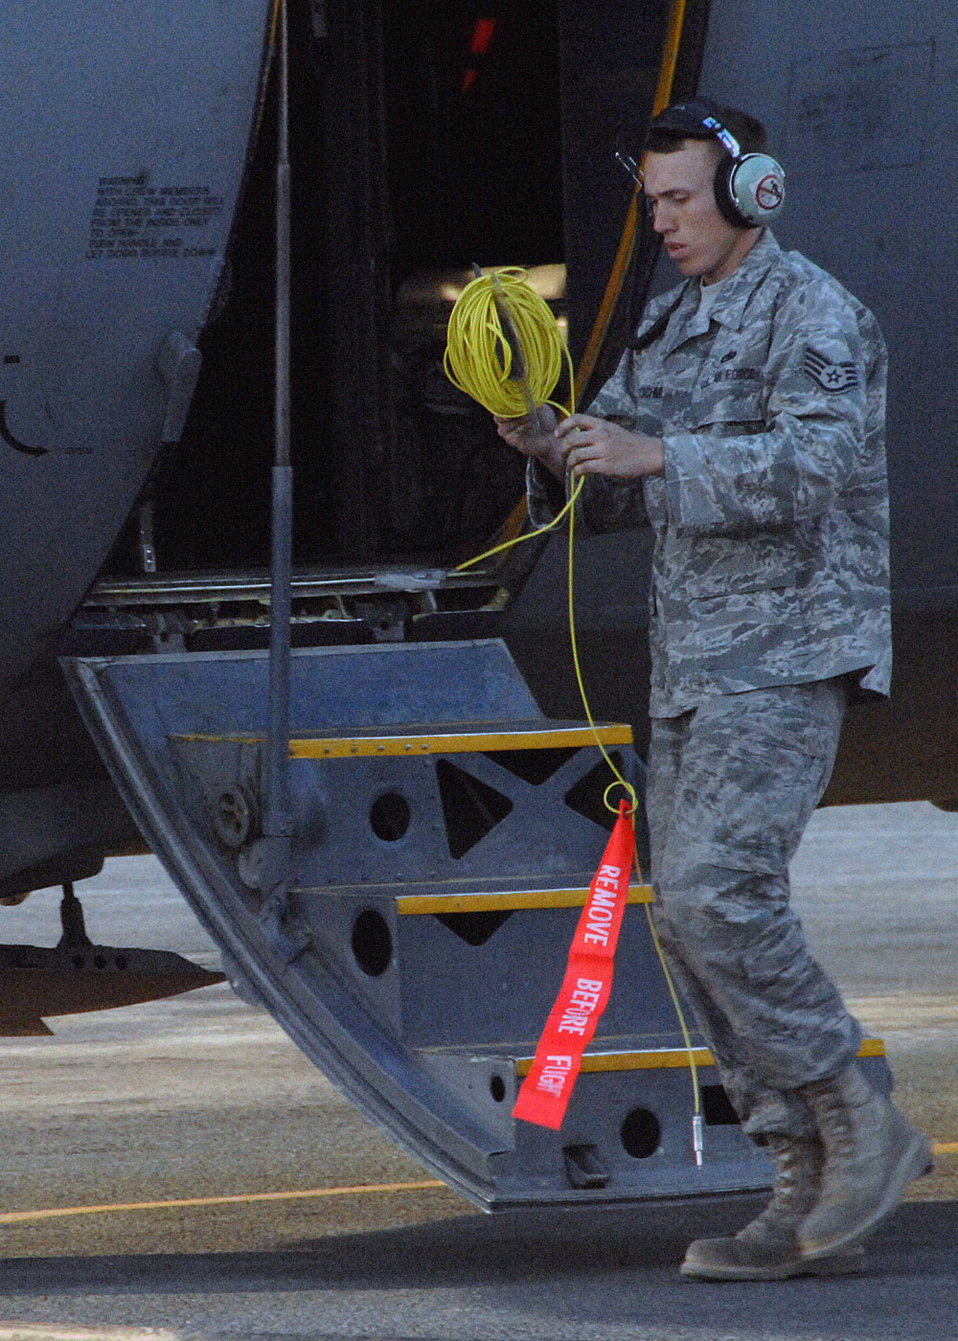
C-130 Final Flight

Staff Sgt. Brad Kretschmer, crew chief for C-130 Hercules no. 1847 at an air base in Southwest Asia, finishes his maintenance check after his C-130 completed its final combat mission Jan. 28. After 47 years of service, the aircraft is being retired. Sergeant Kretschmer has been the crew chief for this aircraft for the past three years, and will fly with the aircraft back to Germany.